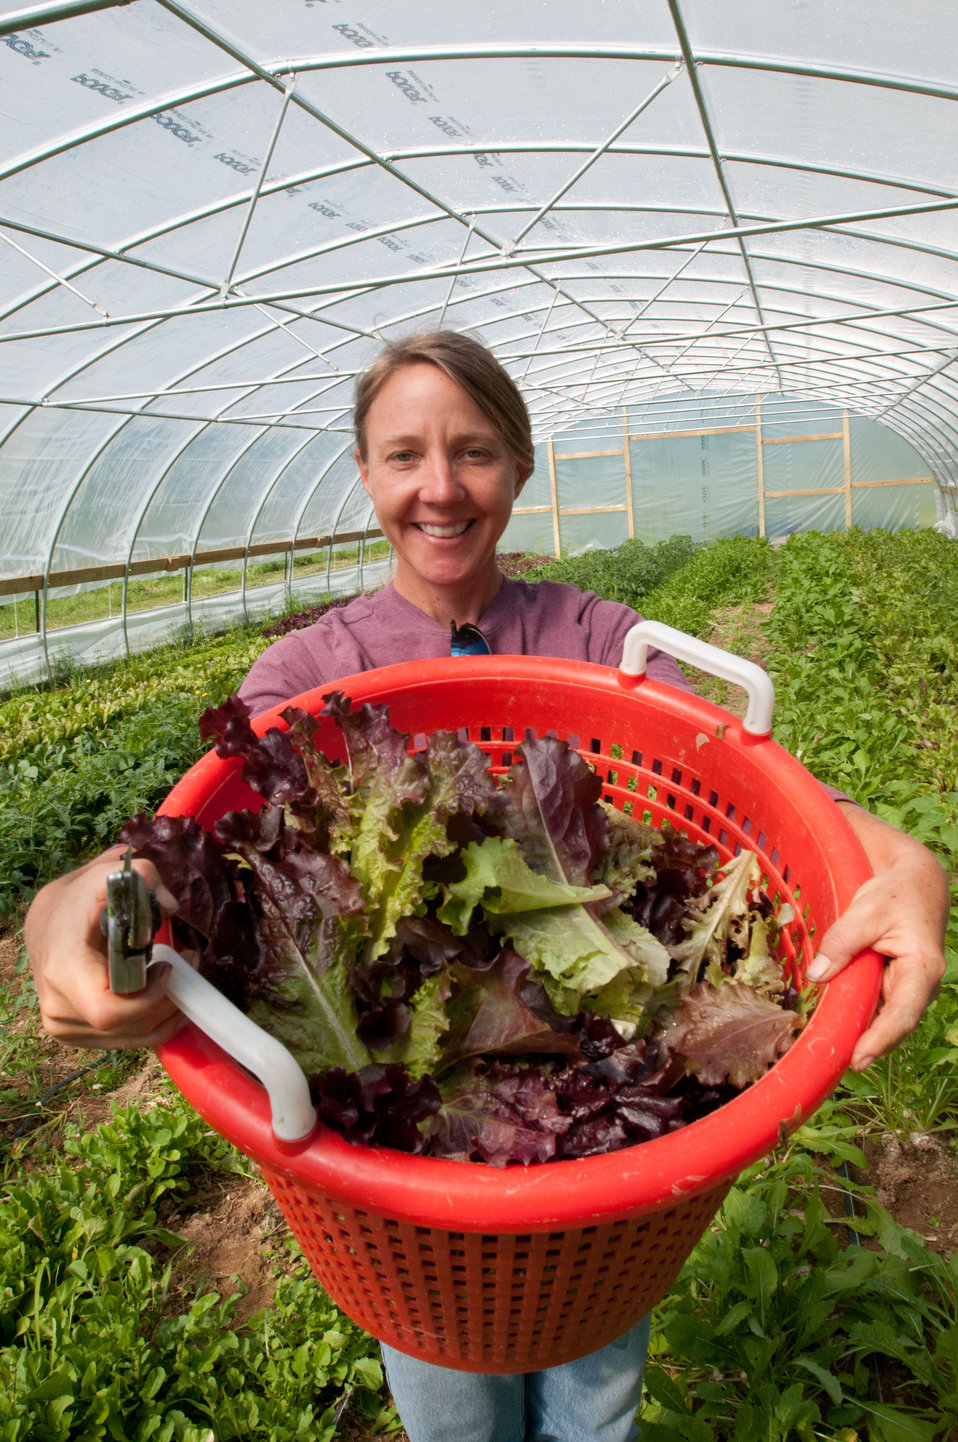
Amy's Organic Garden in Charles City, VA, on Thursday, May 5, 2011. Owner Amy Hicks harvesting greens at her farm. Ms. Hicks' farm participates with Fall Line Farms a local food cooperative in the Richmond, VA area that offers a wide variety of household food staples and specialty items on an ever changing inventory of fruits, vegetables, meats, soaps, eggs, cheeses, flowers, honey, pastas, sauces, syrups, baked goods, mushrooms, flour and grains. Suppliers post what they have on a Lulus Local Food online listing and customers can make their selection. Every Thursday suppliers deliver orders to, one of several pick-up points, designated by the customers in or around the Richmond area.